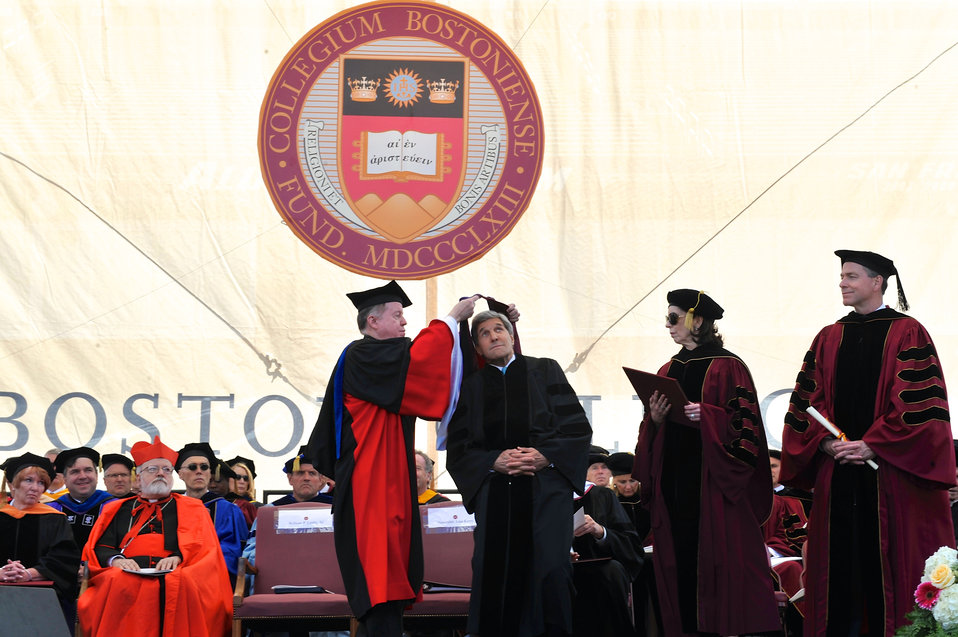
Secretary Kerry Receives Honorary Degree During Boston College Commencement

U.S. Secretary of State John Kerry, a 1976 graduate of Boston College Law School, ducks as Boston College President William Leahy places an academic hood on him after the Secretary received an honorary degree during commencement exercises in Boston, Massachusetts, on May 19, 2014.